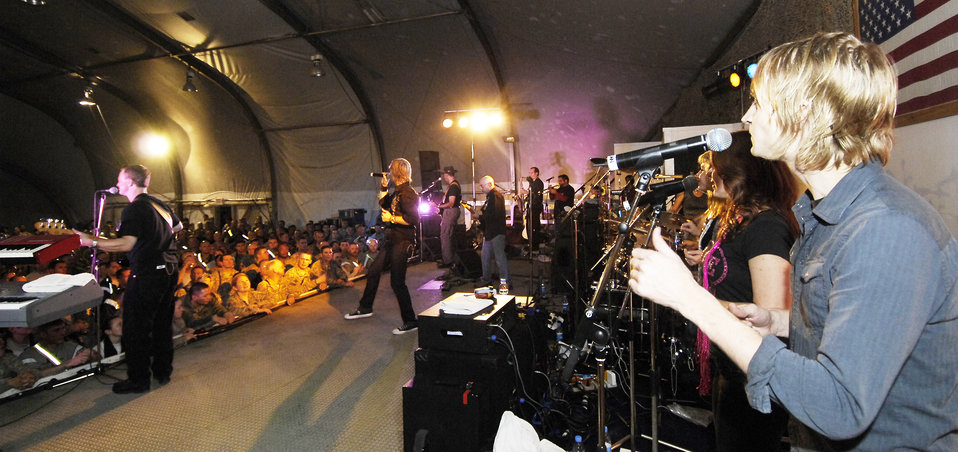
Celebrities thank troops at Thanksgiving concert

The Lieutenant Dan Band performs for troops Nov. 23, 2009, at Bagram Airfield, Afghanistan.